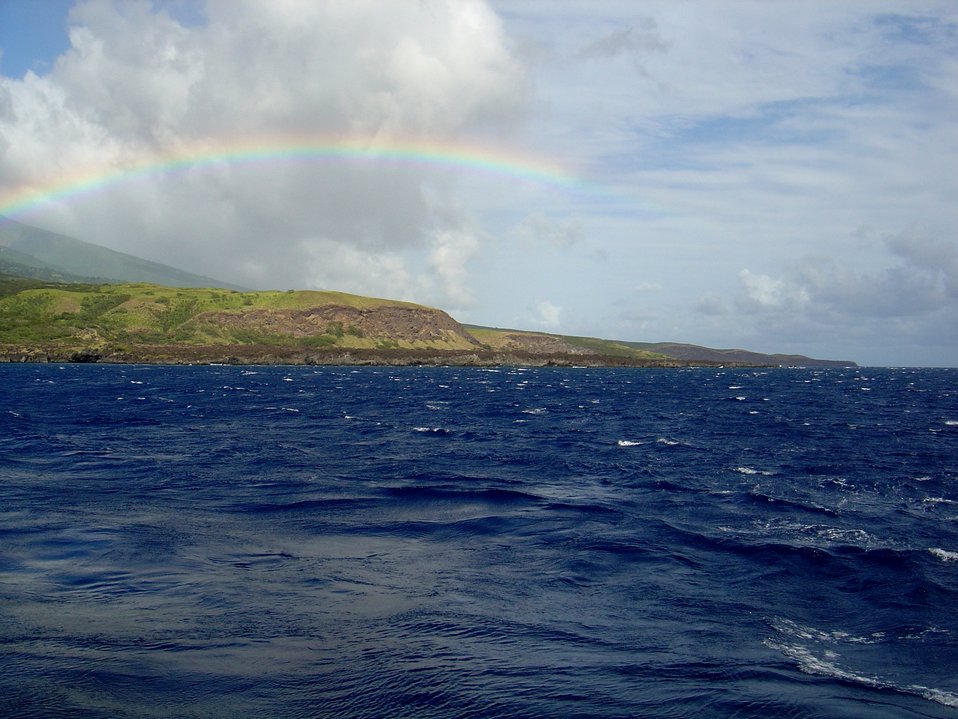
Coast of southern Maui.